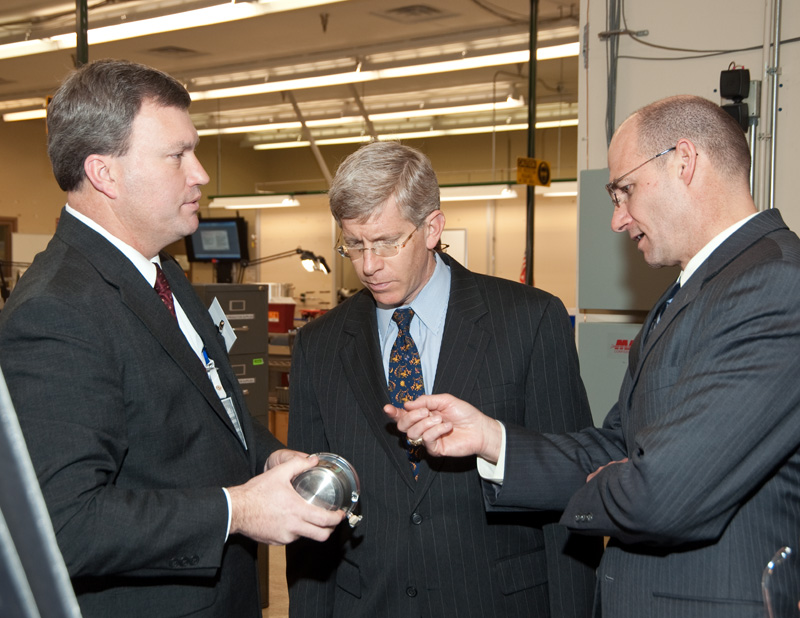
Deputy Secretary Daniel Poneman and NNSA Administrator Thomas D'Agostino discuss a component.